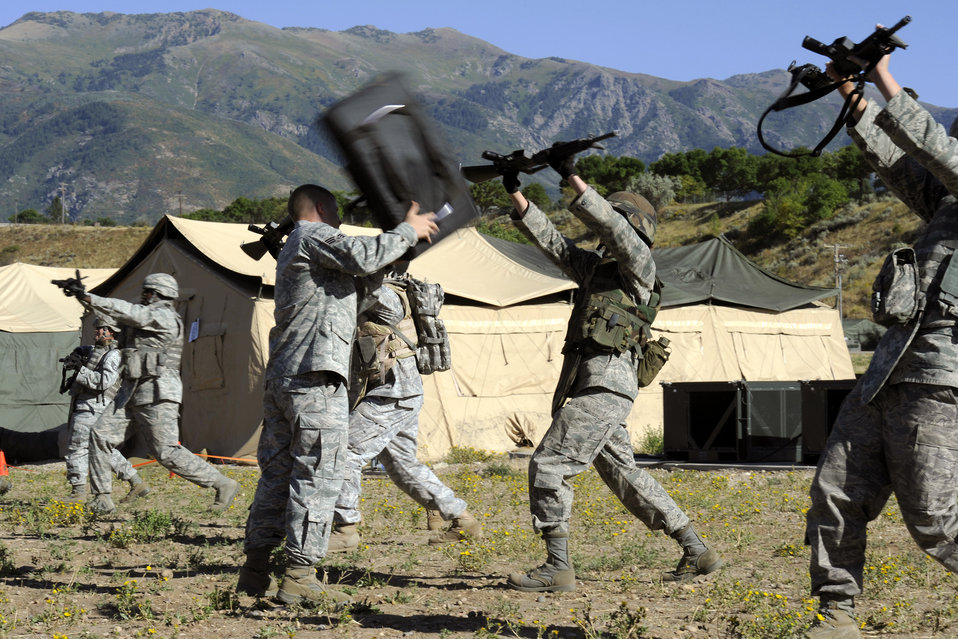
Security forces prepare for combat at Hill

Senior Airman Stephany Miller uses her rifle to defend an attack while attending combat readiness training at Hill Air Force Base, Utah, Sept. 13, 2010. Airmen Miller is a combat photographer with the 2nd Combat Camera Squadron who is assigned to the 75th Security Forces as an augmentee.